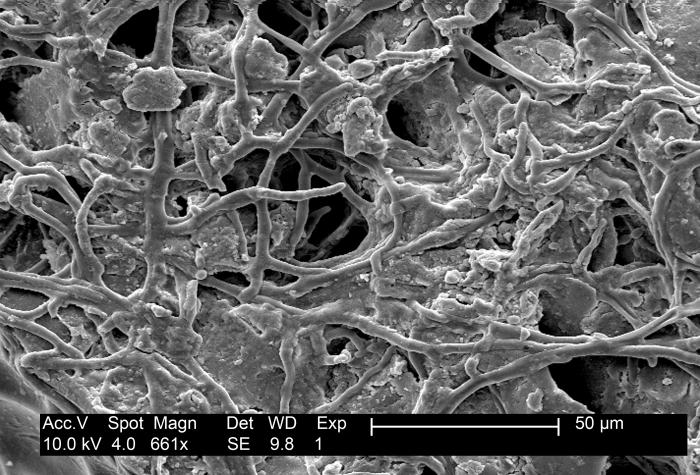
Magnified 661x, this electron micrograph reveals the details of the textured surface found on a honeydew melon, Cucumis melo.Tips for Fresh Produce SafetyBuying Tips: